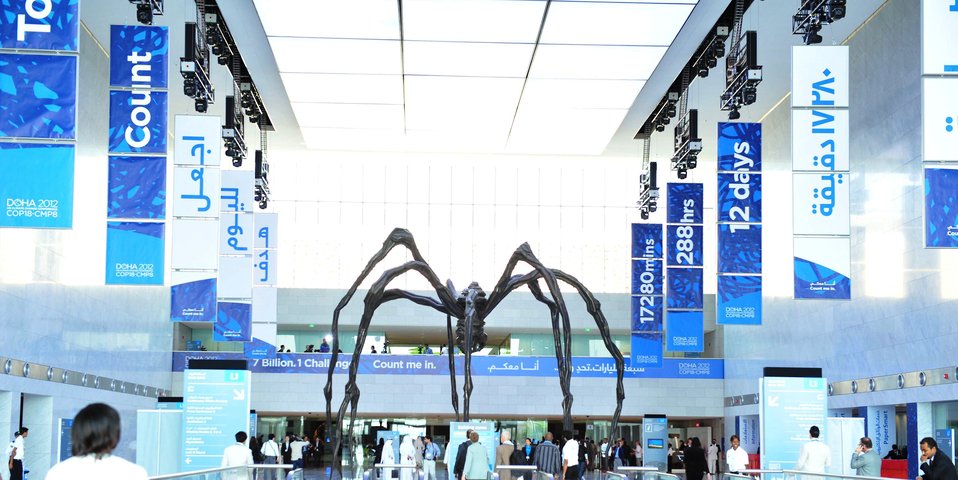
COP-18 at the Qatar National Convention Center

A photo is taken outside the U.S. Center at the 18th Session of the Conference of the Parties to the UN Framework Convention on Climate Change (COP-18) at the Qatar National Convention Center in Doha, Qatar, November 26, 2012.